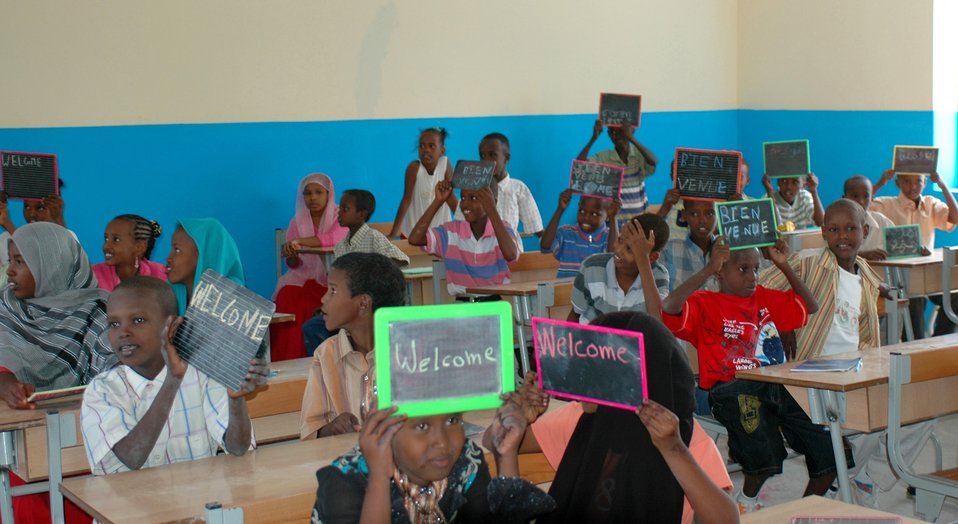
Additions to Djiboutian schools help children's education

Schoolchildren welcome Army Brig. Gen. Sanford Holman and Stuart Symington their new classrooms Sept. 6 at the Goubetto primary school in the village of Balbala. The visit included a dedication and ribbon-cutting ceremony, marking the hand-over of a new-stocked library, bathroom facilities, a stage area for plays and a new power supply to the primary school. General Holman is the Combined Joint Task Force-Horn of Africa deputy commander and Mr. Symington is the U.S. Ambassador to Djibouti.